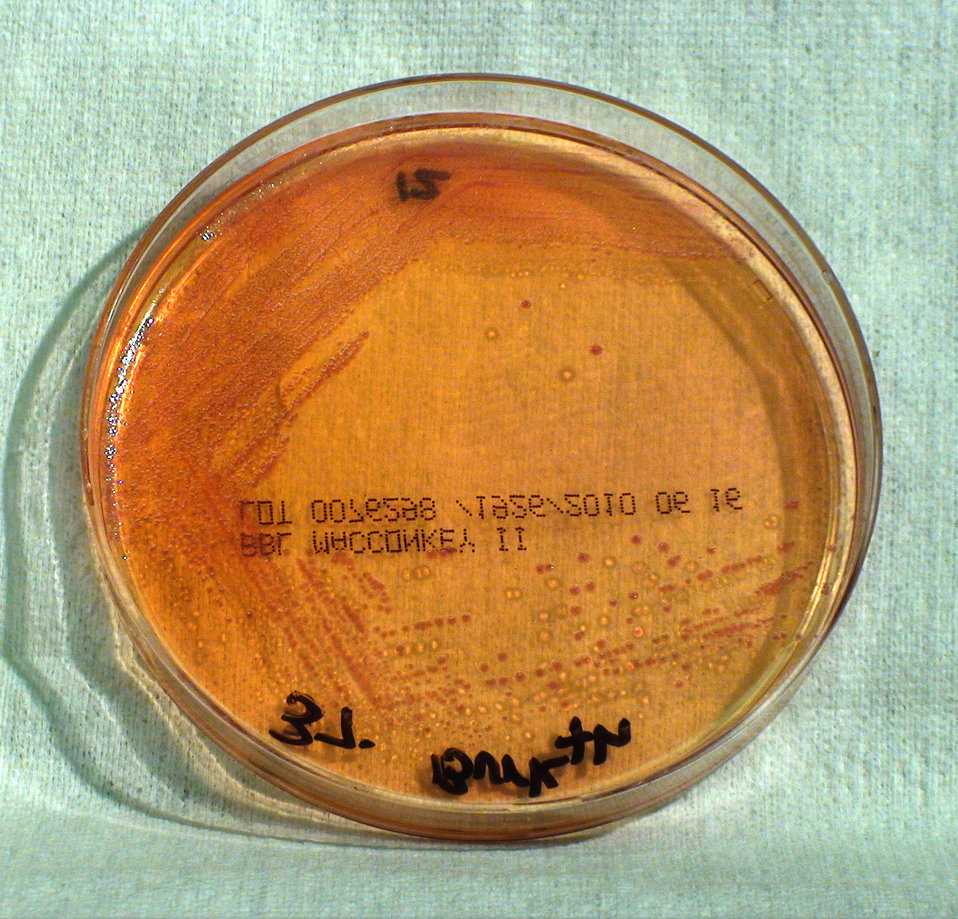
This photograph depicts the colonial morphology displayed by Gram-negative Burkholderia thailandensis bacteria, which was grown on a medium of MacConkey agar, for a 48 hour time period, at a temperature of 37�C. See PHIL 12406, for a closer view of these bacterial colonies. Also, see both PHIL 12410 and 12411, for views of this bacterial specie, grown on the same medium, for the same amount of time, however, at a greater temperature of 42�C, and note that PHIL 12419 and 12420 depict the same bacterial specie grown on the same media and at the same temperature, but for only 24hrs. Take a look at PHIL 12427 and 12428, which depicts B. thailandensis grown on the same medium, but at a greater temperature (42�C), and only half the time (24hr).